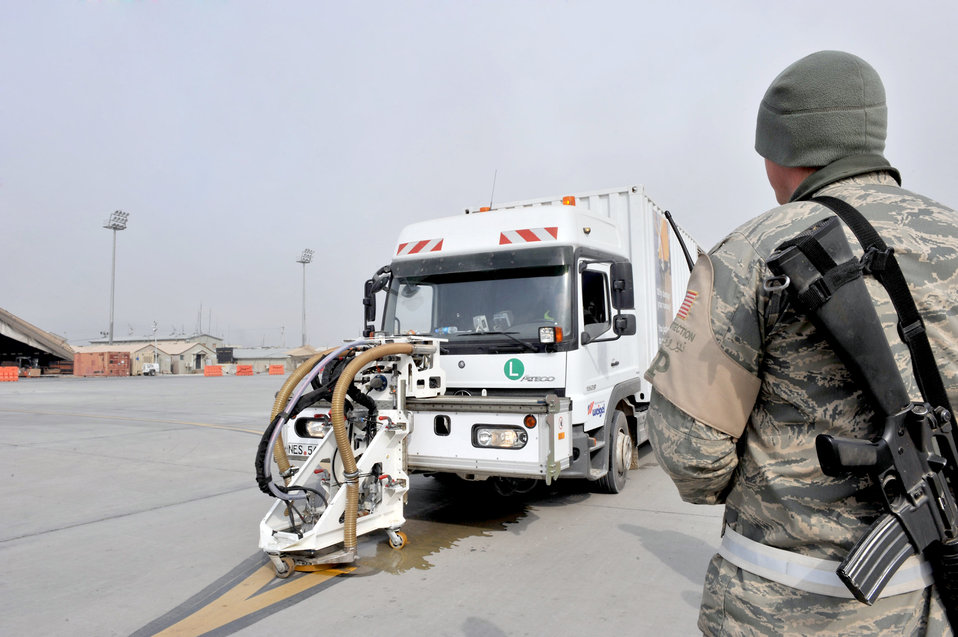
Rubber and Paint Removal

Senior Airman Robert Harris watches a contractor from EMTA Electric Engineering Construction Contracting and Trade Inc. remove paint Feb. 1, 2011, at Bagram Air Field, Afghanistan. EMTA, a company headquartered in Turkey, has been contracted to remove excess rubber from runways and repaint more than 40 aircraft parking spaces here. Airman Harris is a force-protection escort assigned to the 455th Expeditionary Civil Engineer Squadron.